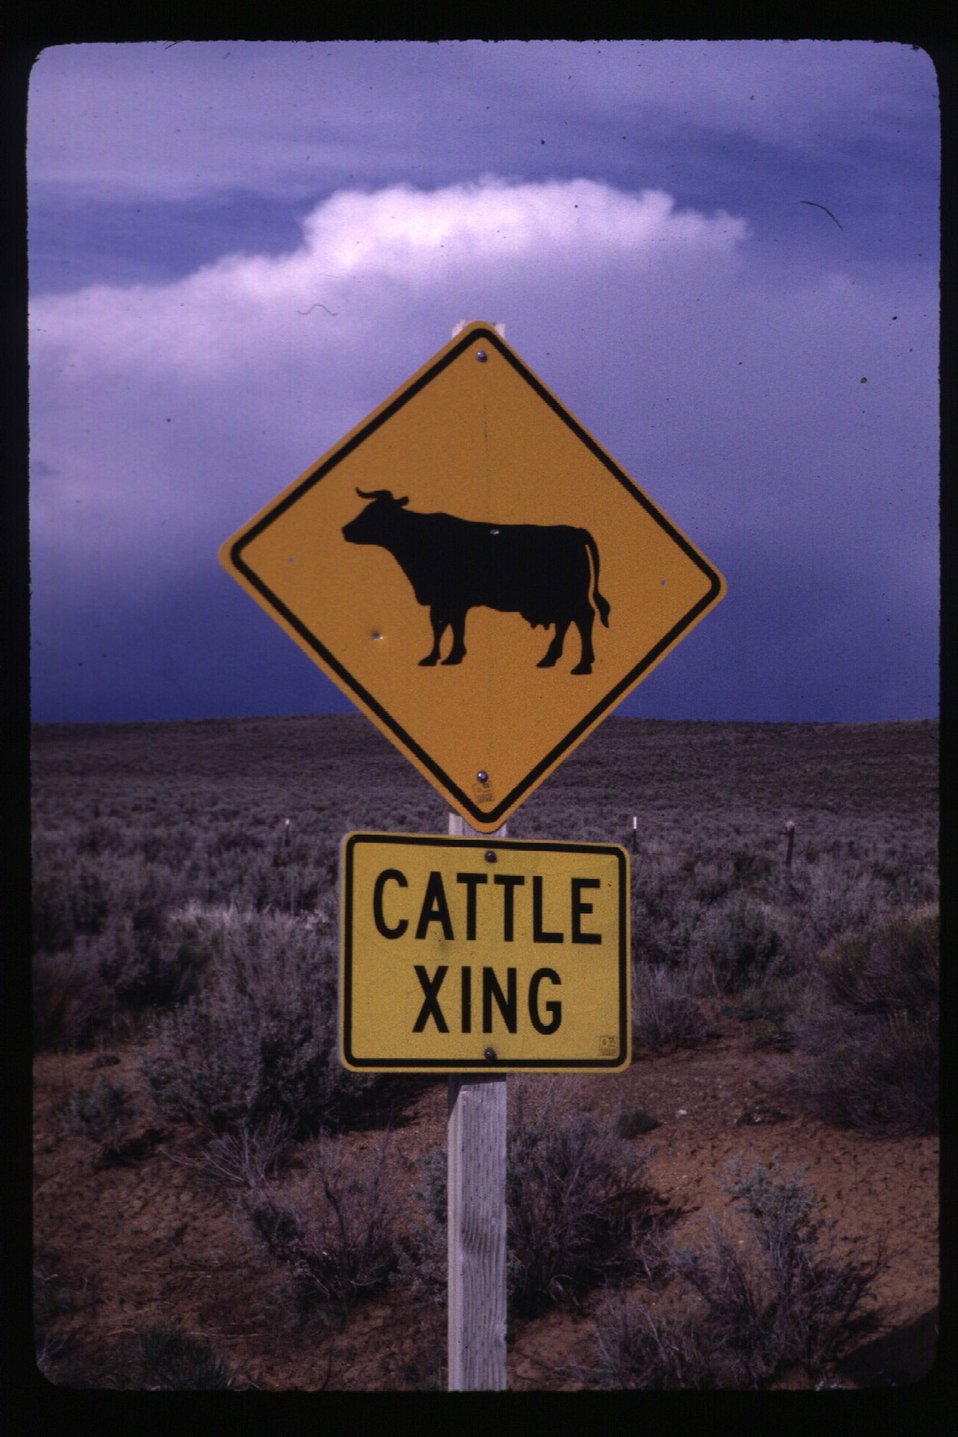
Rangeland Cow x-ing sign LSRD Lower Snake River District